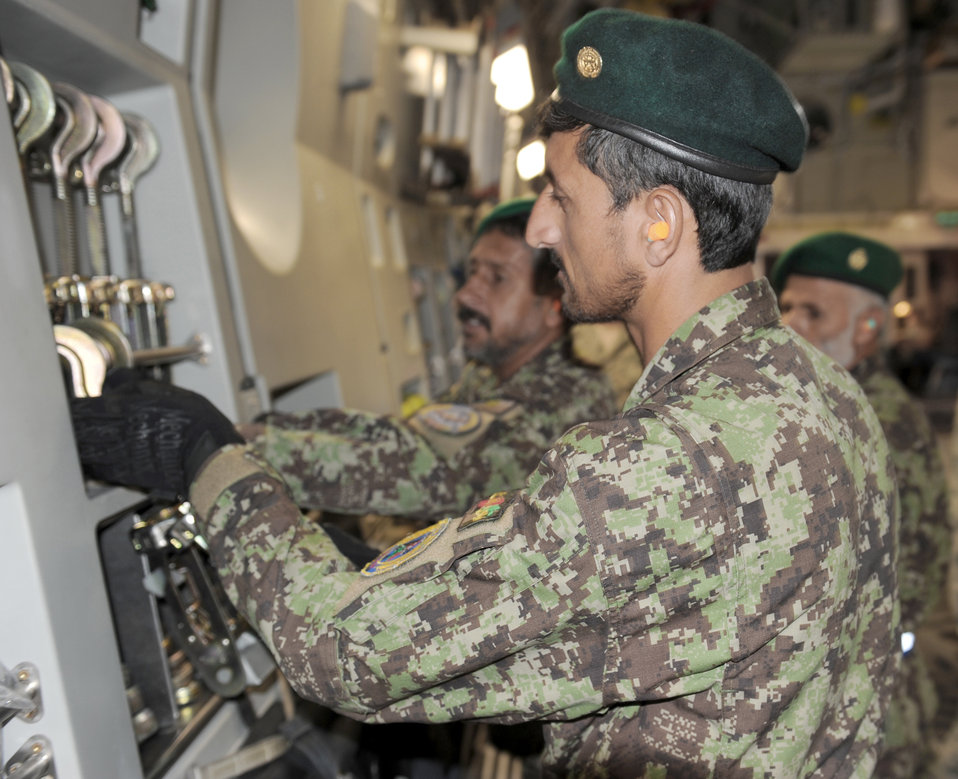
Afghan aerial porters visit Bagram, learn to supply the fight more efficiently

An Afghan aerial porter replaces a tie down aboard a C-17 Globemaster III July 28, 2010, at Bagram Airfield, Afghanistan.